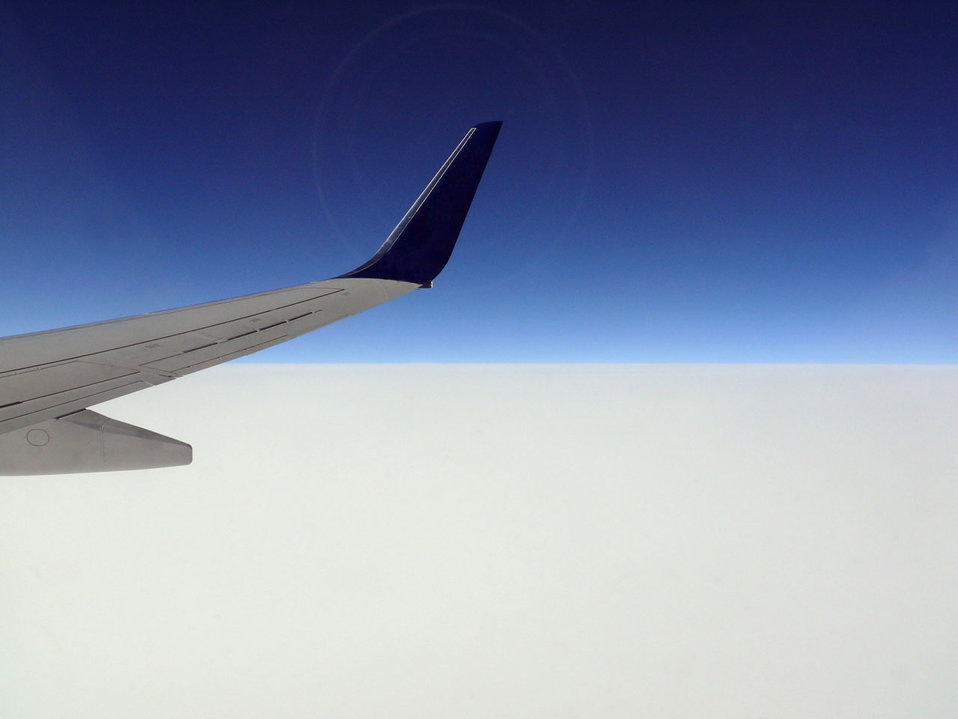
Aeroplane in the sky.